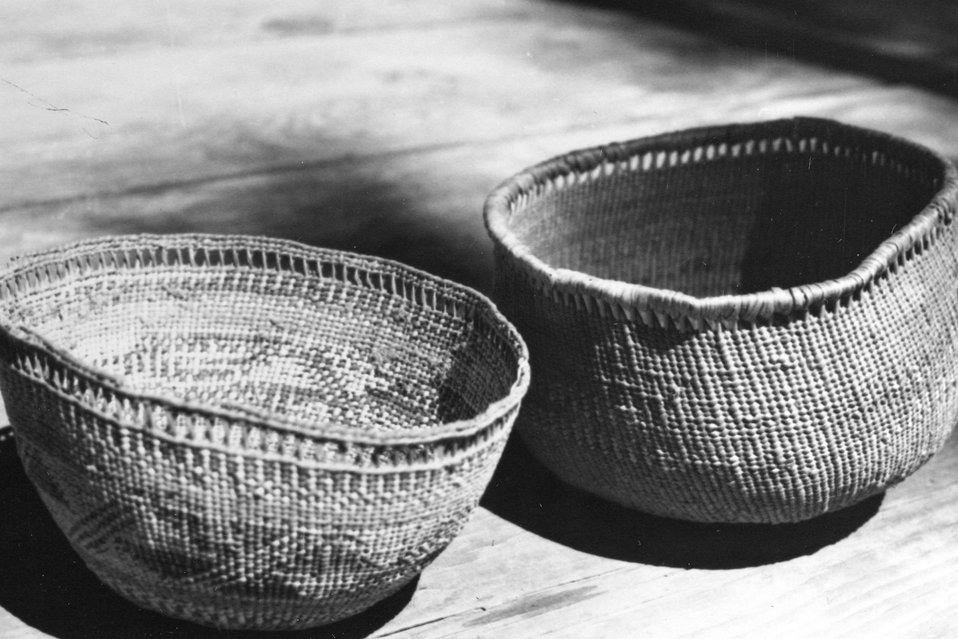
A basket made by Adeline Billings.